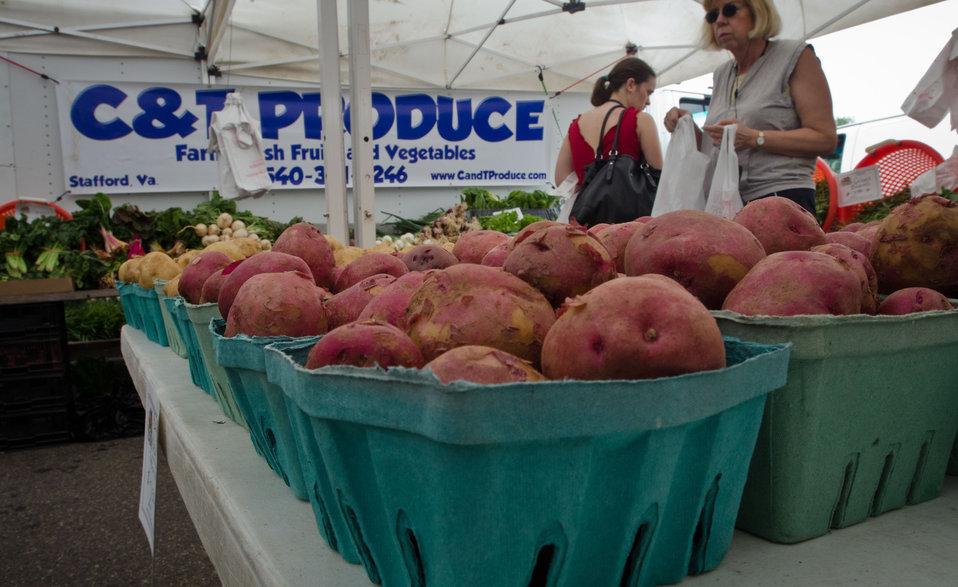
Fresh vegetables from C & T Produce at the U.S. Department of Agriculture (USDA) summer farmers market opening of the 17th season at the USDA Whitten Building east parking lot in Washington, D.C., on Friday, May 31, 2012. This year's theme is Grow, Healthy, Eat Healthy & Be Healthy. USDA and Fuel Up to Play 60, in partnership with the National Dairy Council and the National Football League, invited residence, visitors and local school children to participate in opening day activities. Hip Hop Public Health featuring Easy A.D. from Cold Crush Brothers and disk jockey Artie Green play music and invite people to get up on stage to dance or hula hoop to get active. D.C. Truck Farm help people know from what plants, that certain herbs, fruit and produce come from by giving tail-gate tours of the garden growing in the bed of their pickup truck. The Peoples Garden Initiative and USDA Executive Master Gardeners gave away a variety of fruit and produce seedlings to include the Tomato ‘Abraham Lincoln’ in celebration of the USDA 150th Anniversary and to share their harvest. New features for 2012 include an on-site sign language interpreter, a hand washing station, and a USDA-certified organic vendor. Other products selling today are fresh fruits, vegetables, herbs, baked goods, meats, kettle popcorn, local honey, hand-made soap and more.